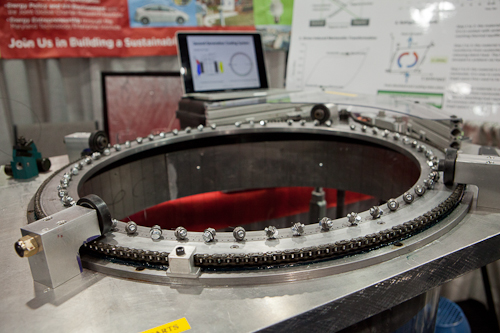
UMD's Thermoelastic Cooling

Researchers at the University of Maryland are developing an energy-efficient cooling system that eliminates the need for synthetic refrigerants that harm the environment. Using thermoelastic cooling systems, UMD is developing and testing shape memory alloys and a cooling device that alternately absorbs or creates heat in much the same way as a vapor compression system, but with significantly less energy and a smaller operational footprint.